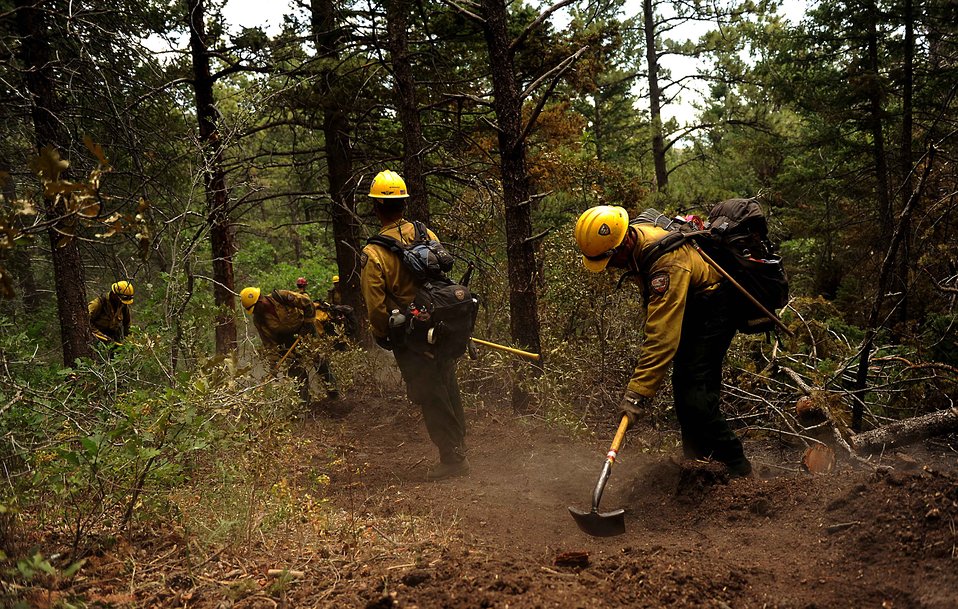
Battle buddies

Firefighters from the Vandenberg Air Force Base, Calif., Hot Shots cut a fire line in the Mount Saint Francois area of Colorado Springs, Colo., while helping to battle several fires in Waldo Canyon on June 28, 2012. The Waldo Canyon fire has grown to 18,500 acres and burned more than 300 homes.